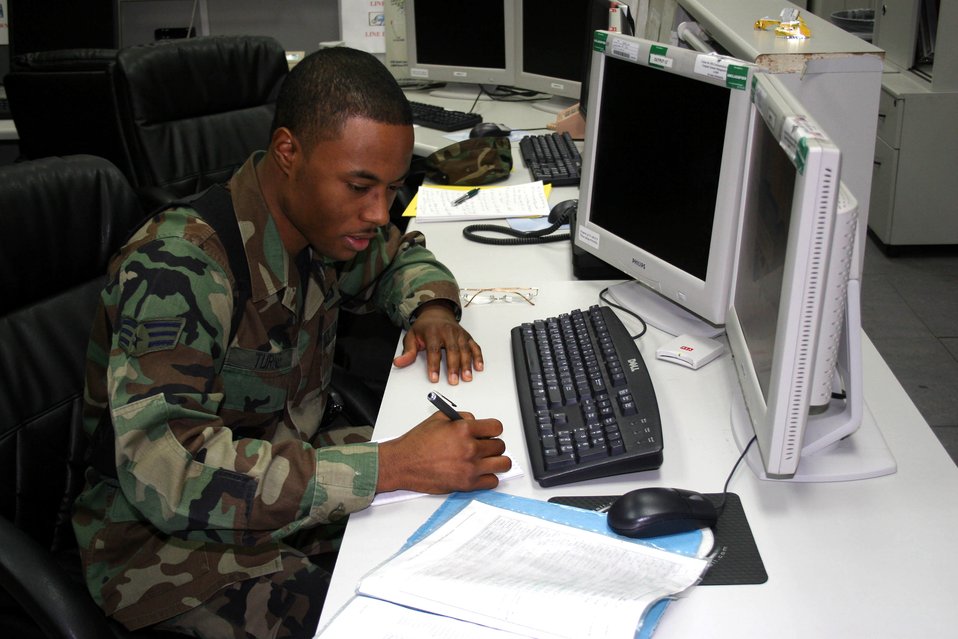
Incirlik controllers vital link in communications process

Senior Airman Terrance Turner deciphers an encrypted message at the command post at Incirlik Air Base, Turkey. Like all command post workers, Airman Turner plays an important role in the base mission by passing critical information to base leaders. The Airman is with the 39th Air Base Wing.